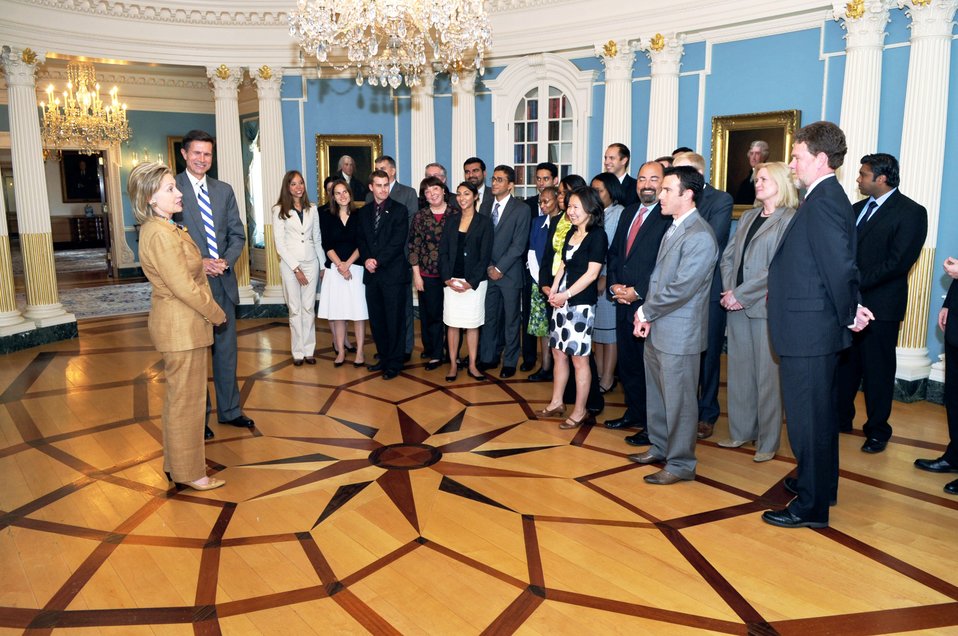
Secretary Clinton With Assistant Secretary Blake Shows Her Gratitude to the Bureau of South and Central Asian Affairs Staff

U.S. Secretary of State Hillary Rodham Clinton, standing beside U.S. Assistant Secretary for South and Central Asian Affairs Robert O. Blake, shows her gratitude to staff from the Bureau of South and Central Asian Affairs involved in the U.S.-India Strategic Dialogue at the U.S. Department of State in Washington, D.C., on June 11, 2010.